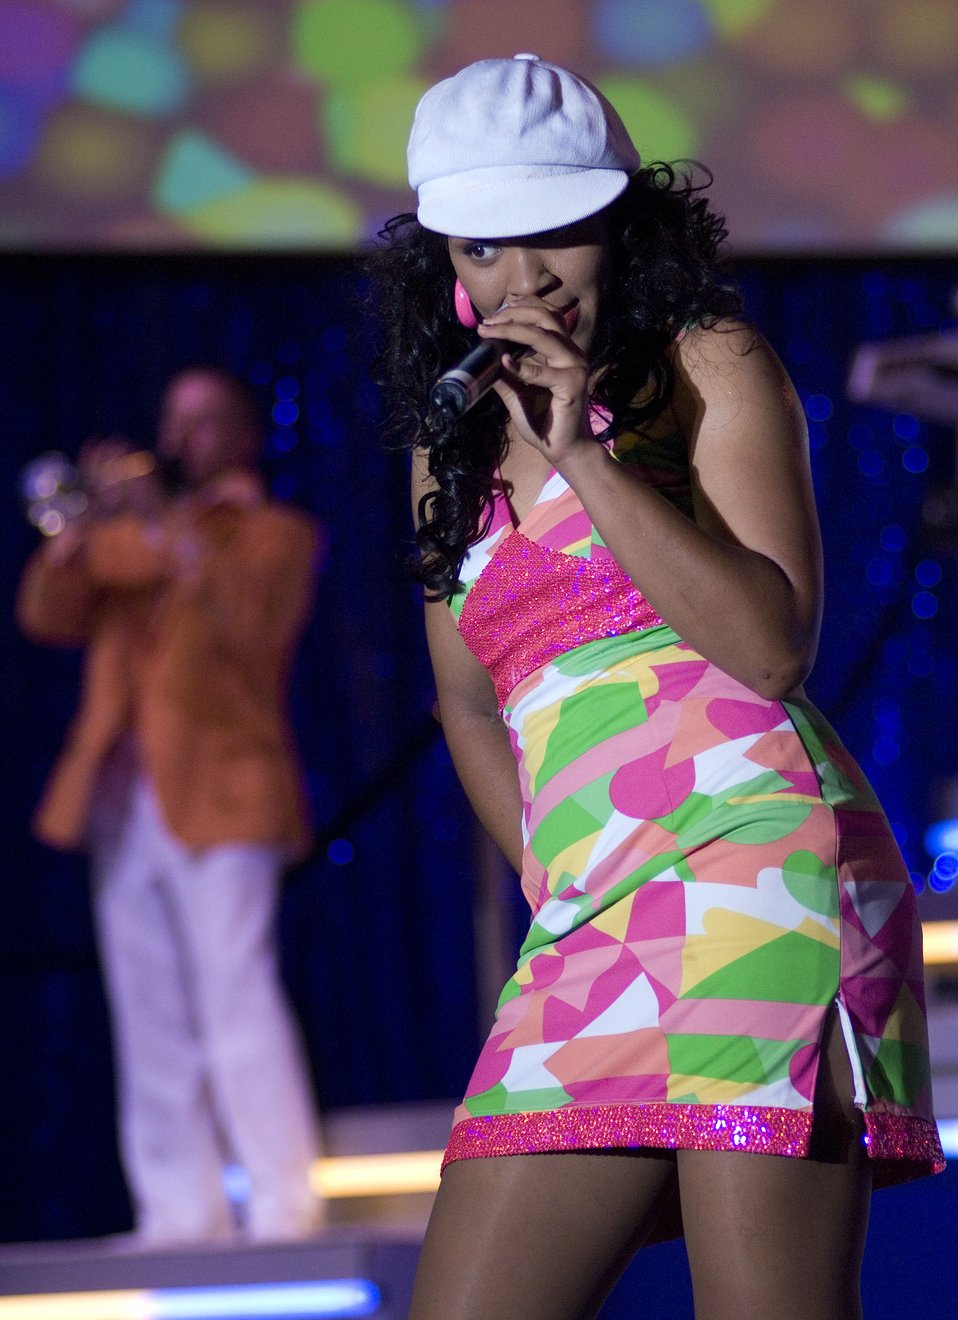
Air Force Week Atlanta

Senior Airman Wallis Payano performs 1980's cover songs during the Tops in Blue musical tribute honoring 60 years of Air Force history Oct. 9 in Mableton, Ga. Tops In Blue was in Georgia as part of Air Force Week Atlanta.